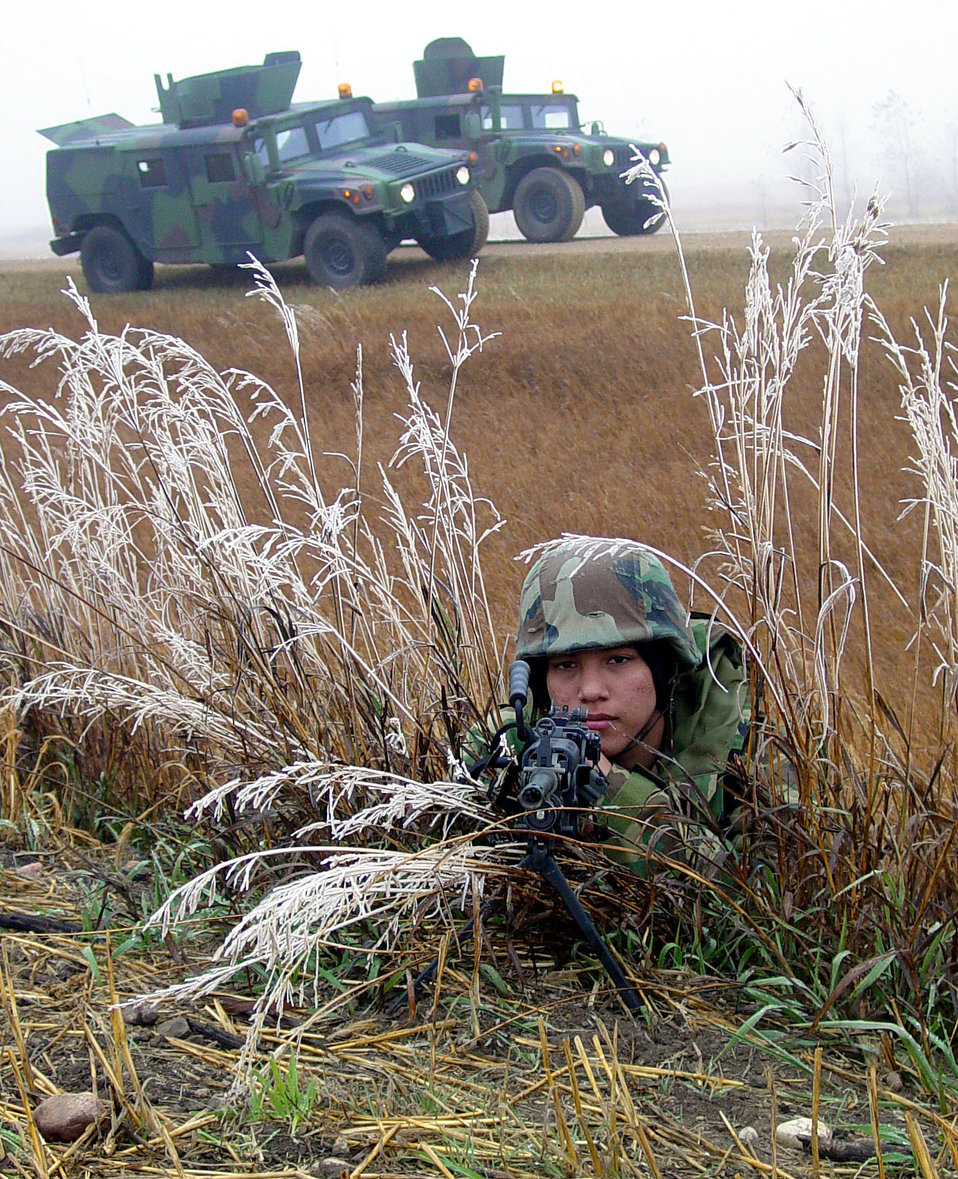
Securing the area

MINOT AIR FORCE BASE, N.D. -- Airman Mike Colberg secures a national-defense area during an exercise here Oct. 16. Colberg is assigned to the 791st Missile Security Forces Squadron.